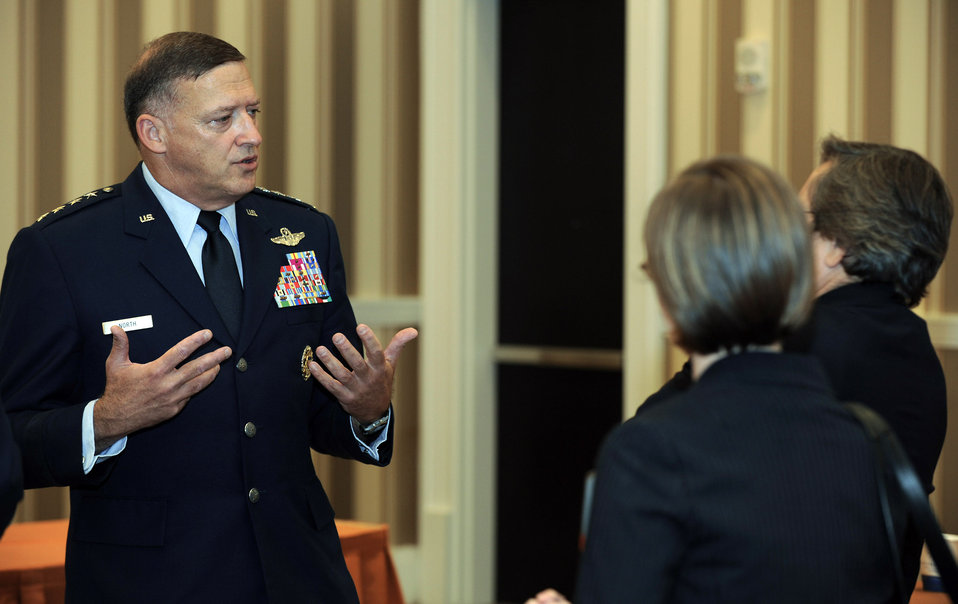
Pacific Air Forces commander focuses on future

Gen. Gary North answers questions from the media during the 2009 Air Force Association Air & Space Conference and Technology Exposition Sept. 16, 2009 at the National Harbor in Oxon Hill, Md. General North is the Pacific Air Forces commander.